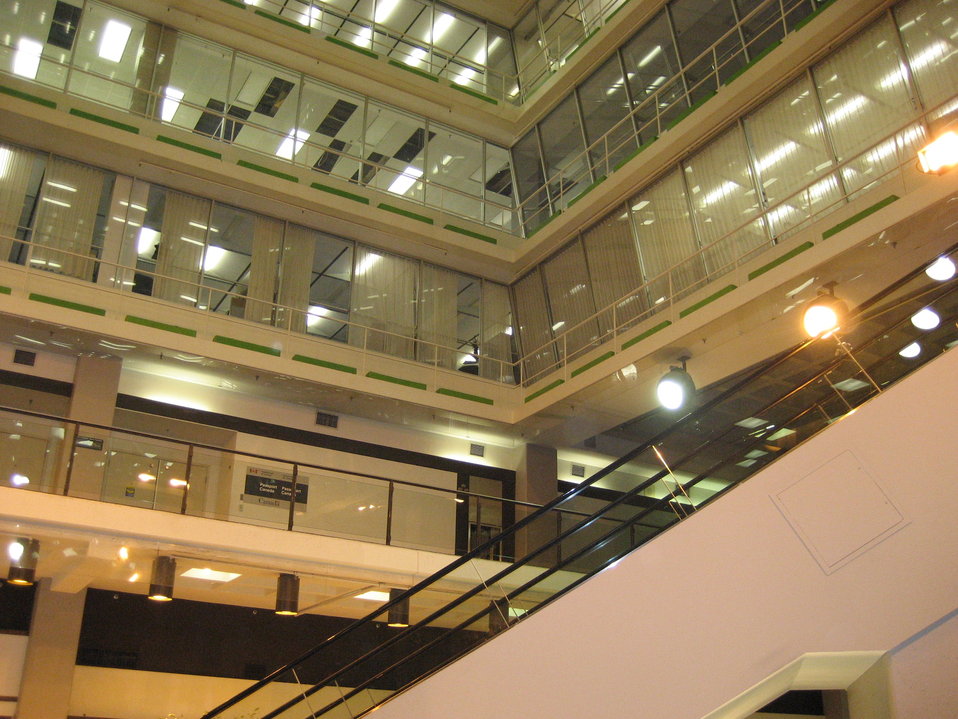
Jackson Square Mall, Standard Life Centre, downtown Hamilton